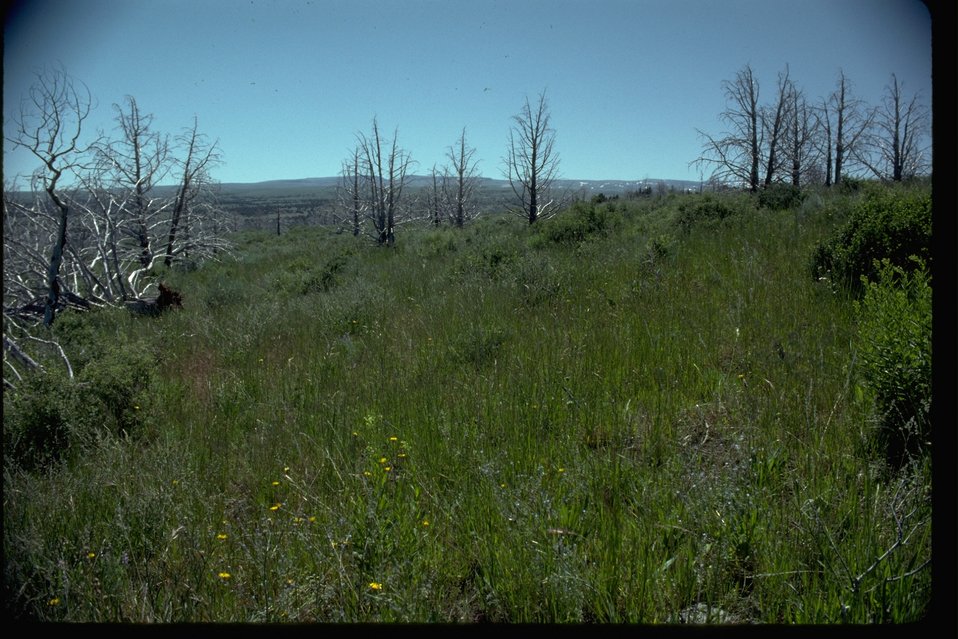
After fire in juniper/aspen stand, excellent understory recovery starting.